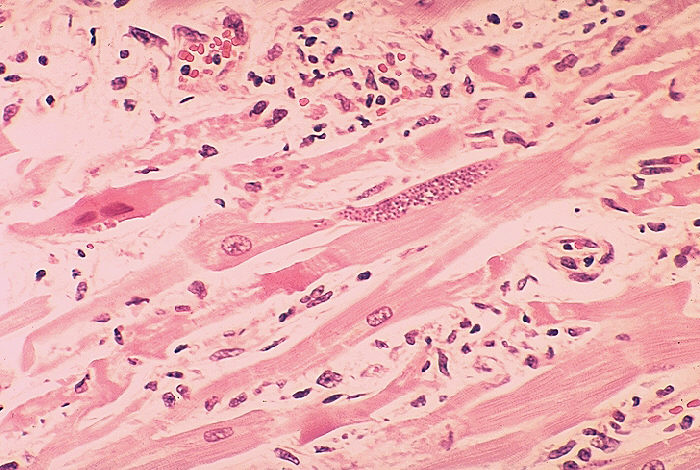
Histopathology of toxoplasmosis of heart in fatal AIDS.